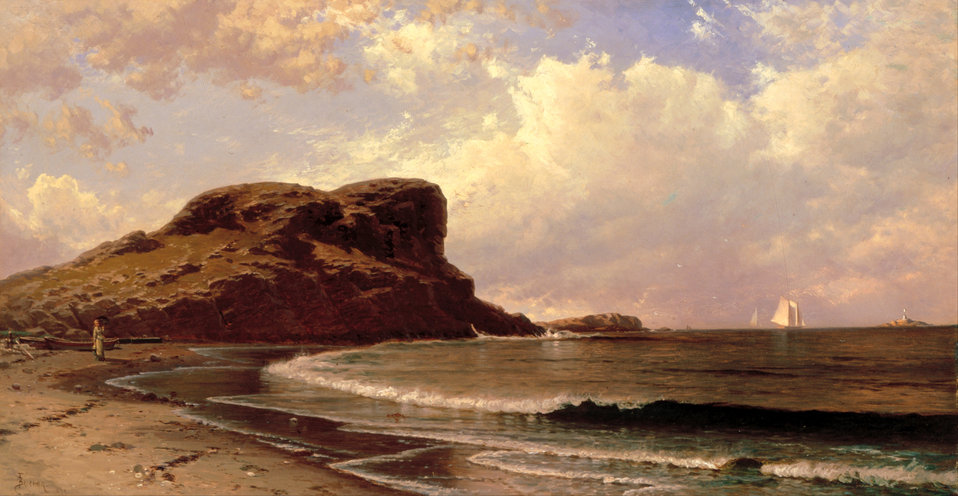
Alfred T. Bricher - Castle Rock, Nahant, Massachusetts - Google Art Project